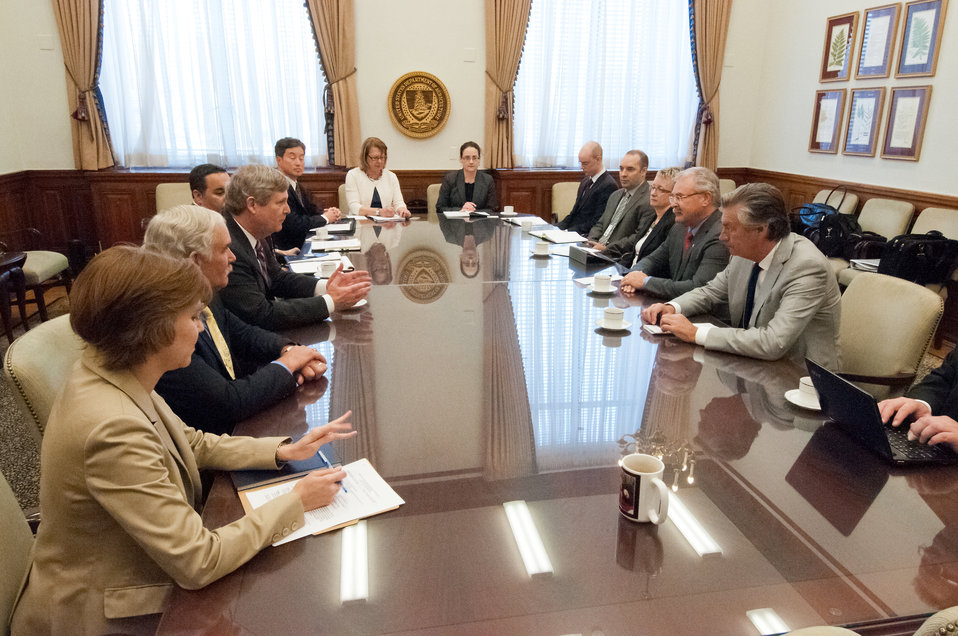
Agriculture Secretary Tom Vilsack met with Gerry Ritz, Canadian Minister of Agriculture and Canadian Ambassador Gary Doer to discuss cooperation, economics and trade in Washington, DC, Tuesday, April 9, 2013. Accompanying Secretary Vilsack were: Michael Scuse, Under Secretary Farm and Foreign Services, Deputy Under Secretary Darcy Vetter, Farm and Foreign Services, Max Holtzman Senior Advisor to the Secretary, Brian Ronholm, Deputy Under Secretary, Food Safety and Ann Bartuska, Deputy Secretary, Research Education and Economics. Accompanying Minister Ritz were: Ambassador Gary Doer, Assistant Deputy Minister Tina Namiesnoiwski, Policy Advisor Dustin Pike, Press Secretary Jeffrey English and Deputy Director Claudine Pagé.